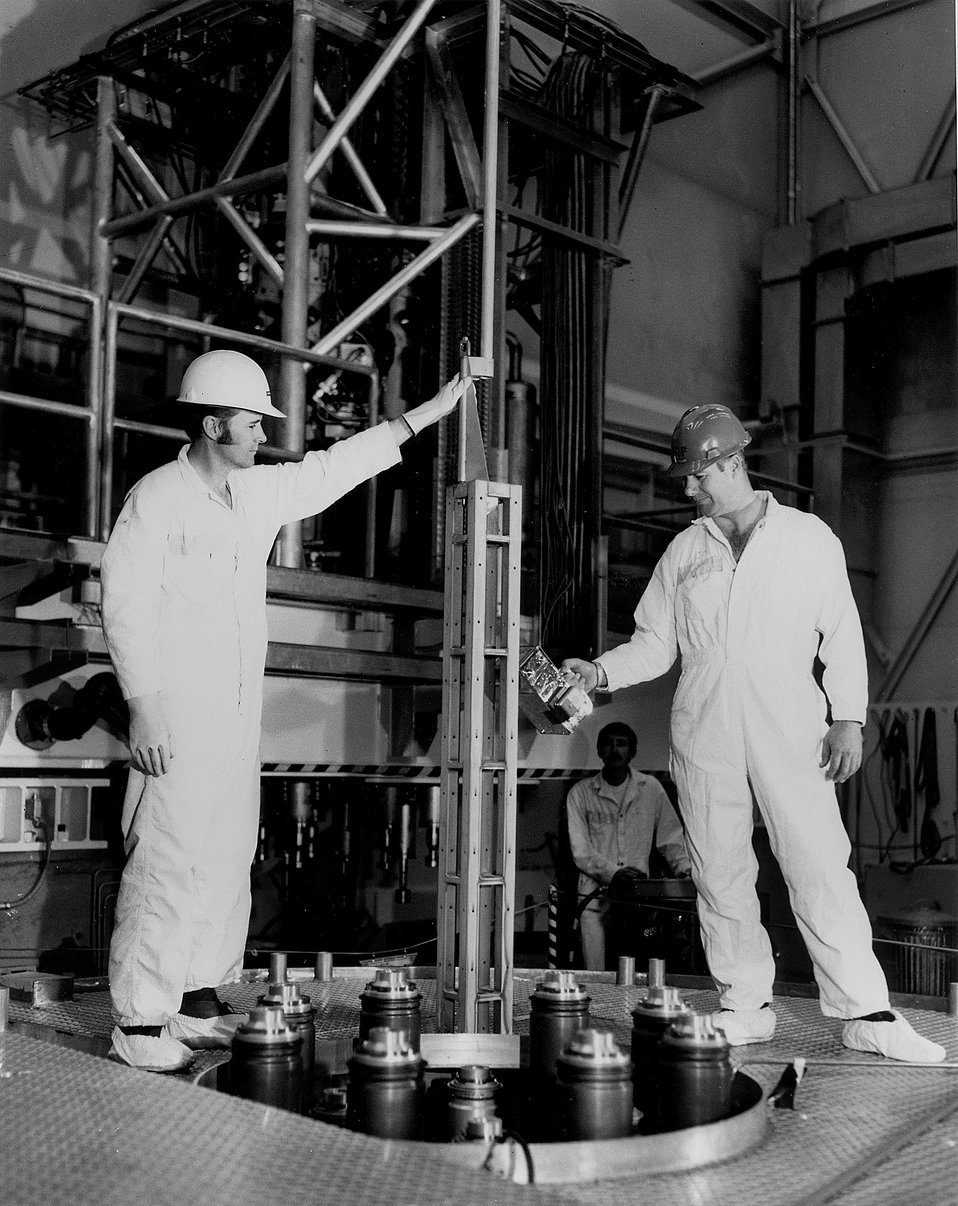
A health physicist monitors operation around one of the testing reactors.